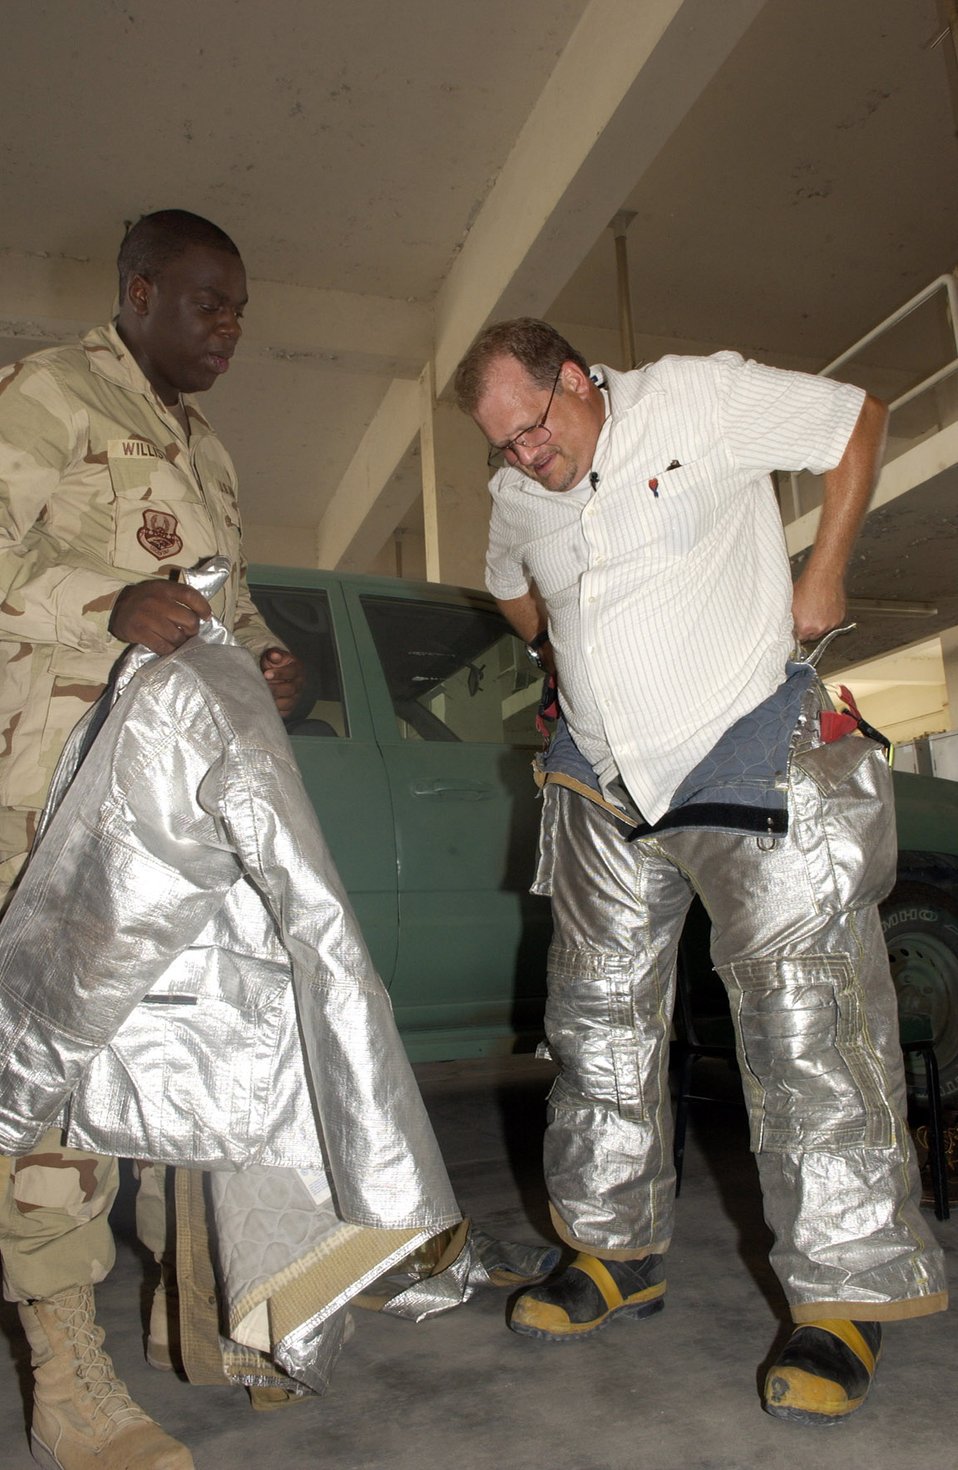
Television star visits troops in Southwest Asia

SOUTHWEST ASIA -- Comedian Drew Carey is assisted by Airman 1st Class Anthony Williston as he dons protective gear bunker pants Aug. 24 at this forward-deployed location. Mr. Carey was part of a five-person comedic team traveling the area to entertain forward-deployed troops. Airman Williston is a fire protection specialist with the 379th Expeditionary Civil Engineer Squadron's fire and emergency services unit.